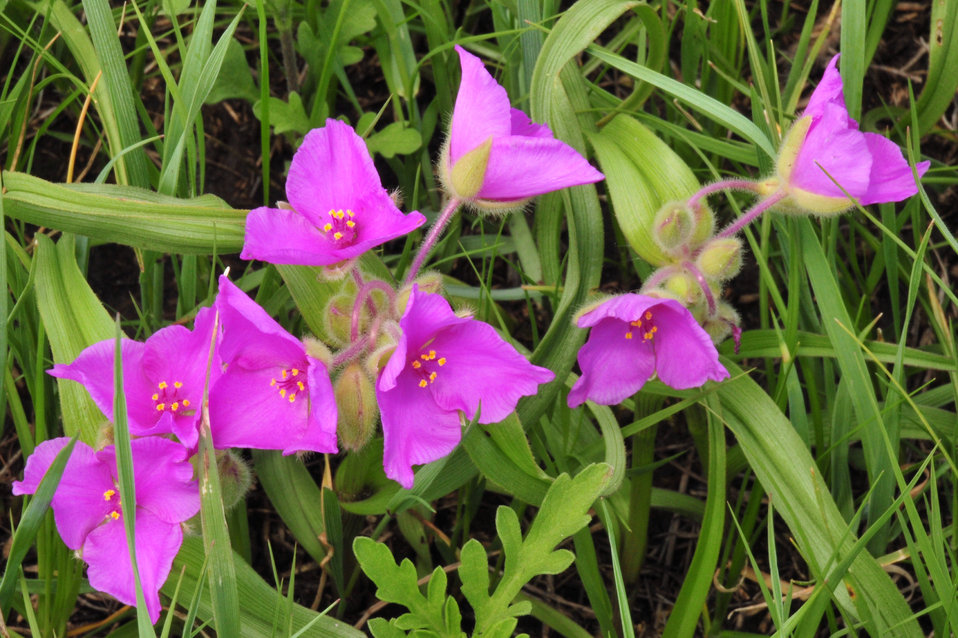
Spiderwort (Tradescantia bracteata) colors the mixed grass prairie on Lacreek National Wildlife Refuge 01

Spiderwort colors the mixed grass prairie of Lacreek National Wildlife Refuge.